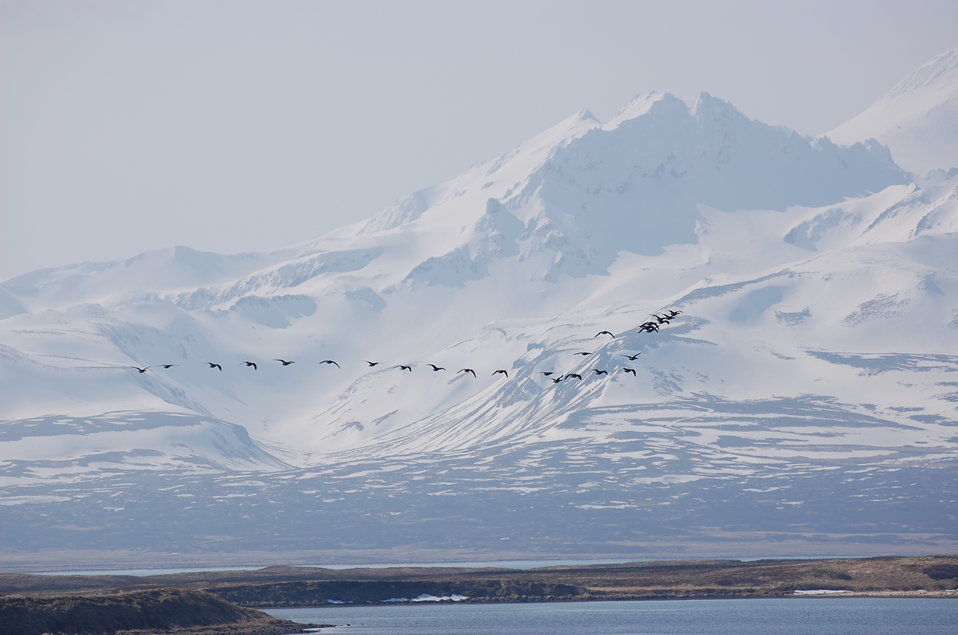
Brant at Izembek Lagoon

Izembek National Wildlife Refuge